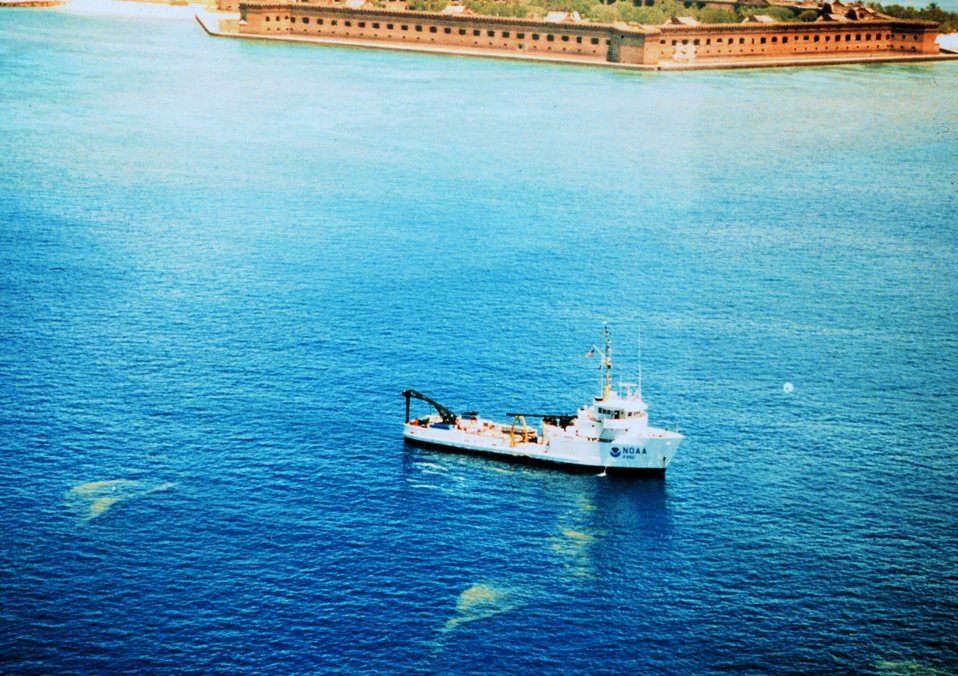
NOAA Ship FERREL at Fort Jefferson